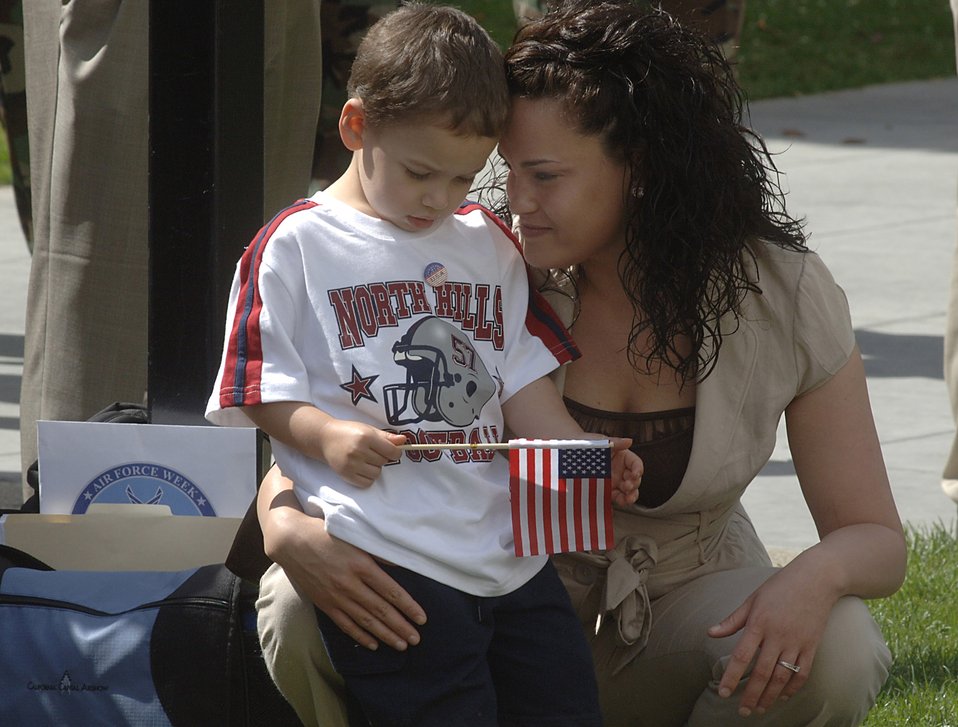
Air Force Week begins in Sacramento

Amy Young hugs her son Noah, 4, during the Air Force Week California Proclamation Ceremony June 4 at Sacramento, Calif. His father is currently deployed to Iraq. The purpose of Air Force Week is to inform and educate the American public about the importance and roles of the Air Force in America's national defense.